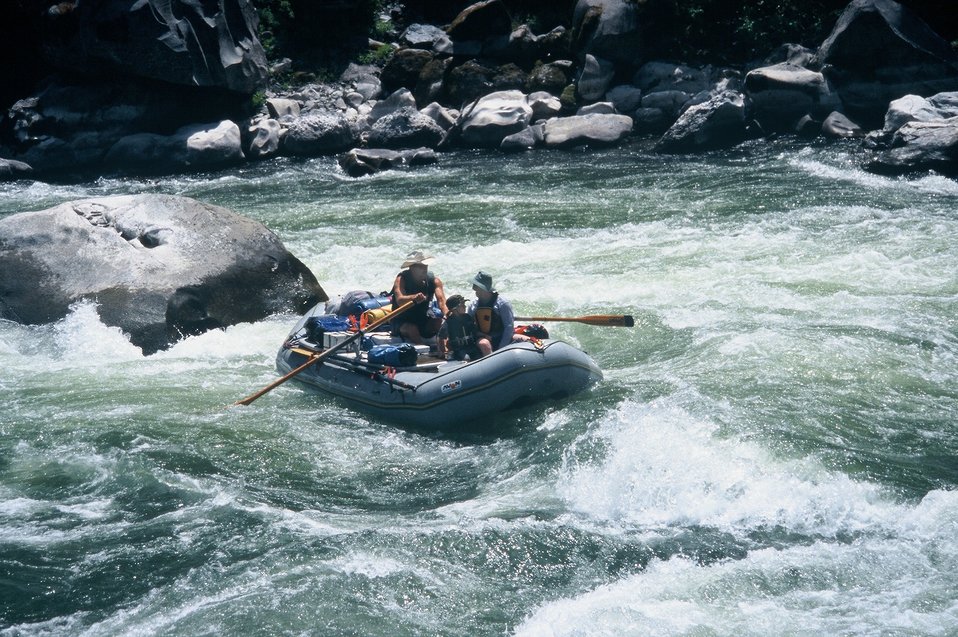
Wild section of the Rogue River from Grave Creek to Foster Bar May 19 to May 22.